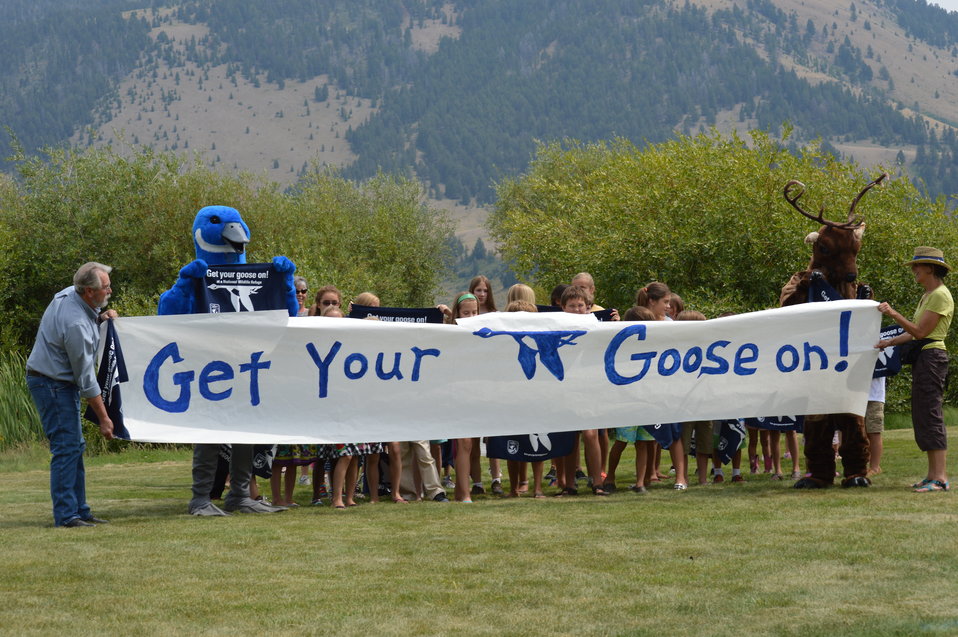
Get Your Goose On! - National Elk Refuge Style

On August 10, 2012 the U.S. Fish and Wildlife Service and Partners celebrated the 100 year anniversary of the establishment of the National Elk Refuge. In these photos, young attendees, along with Puddles the Blue Goose and the National Elk Refuge's mascot, showed us how to Get Your Goose On! with style.